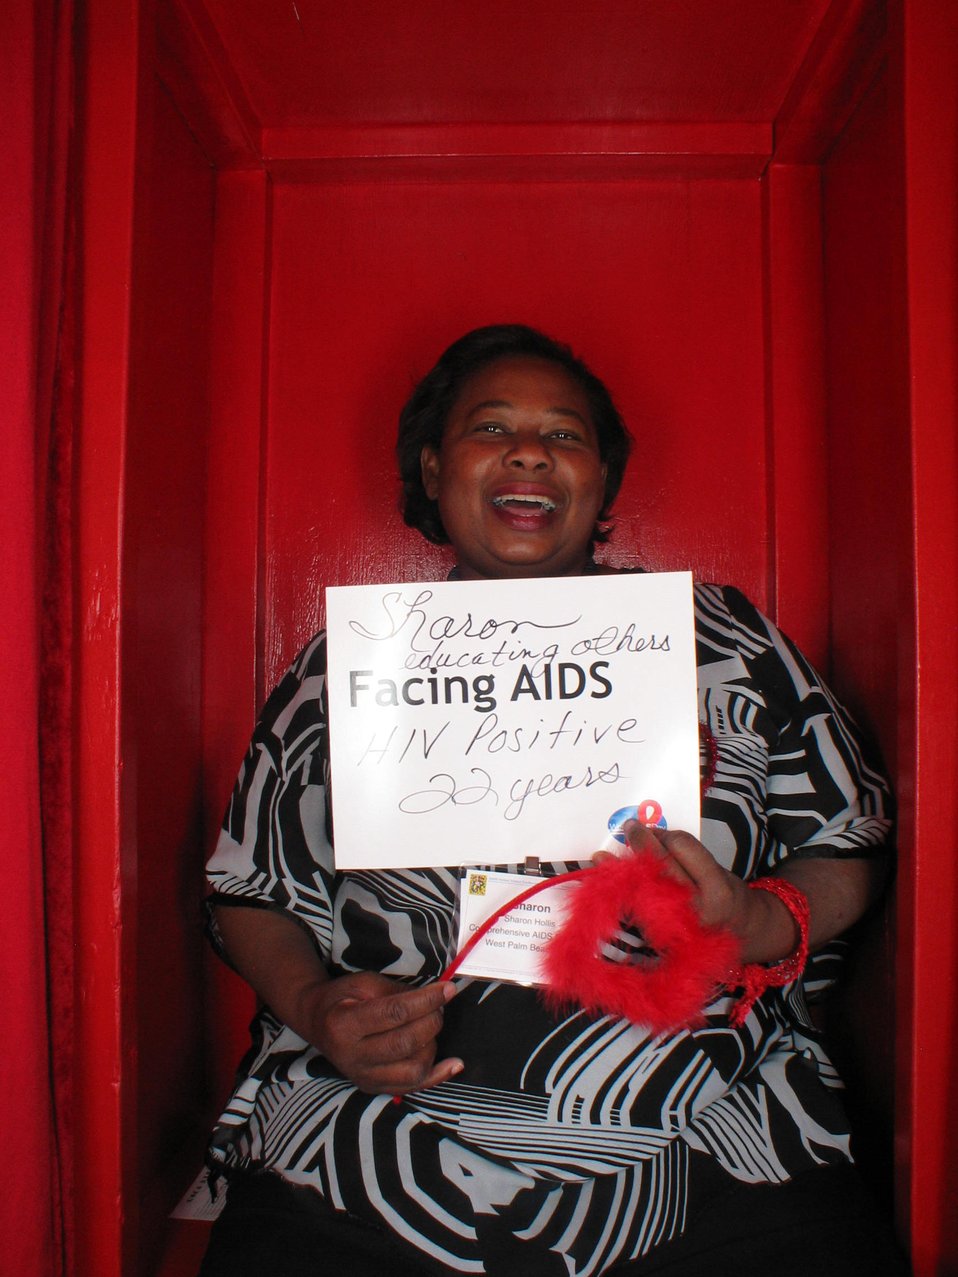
Facing AIDS HIV positive 22 years.